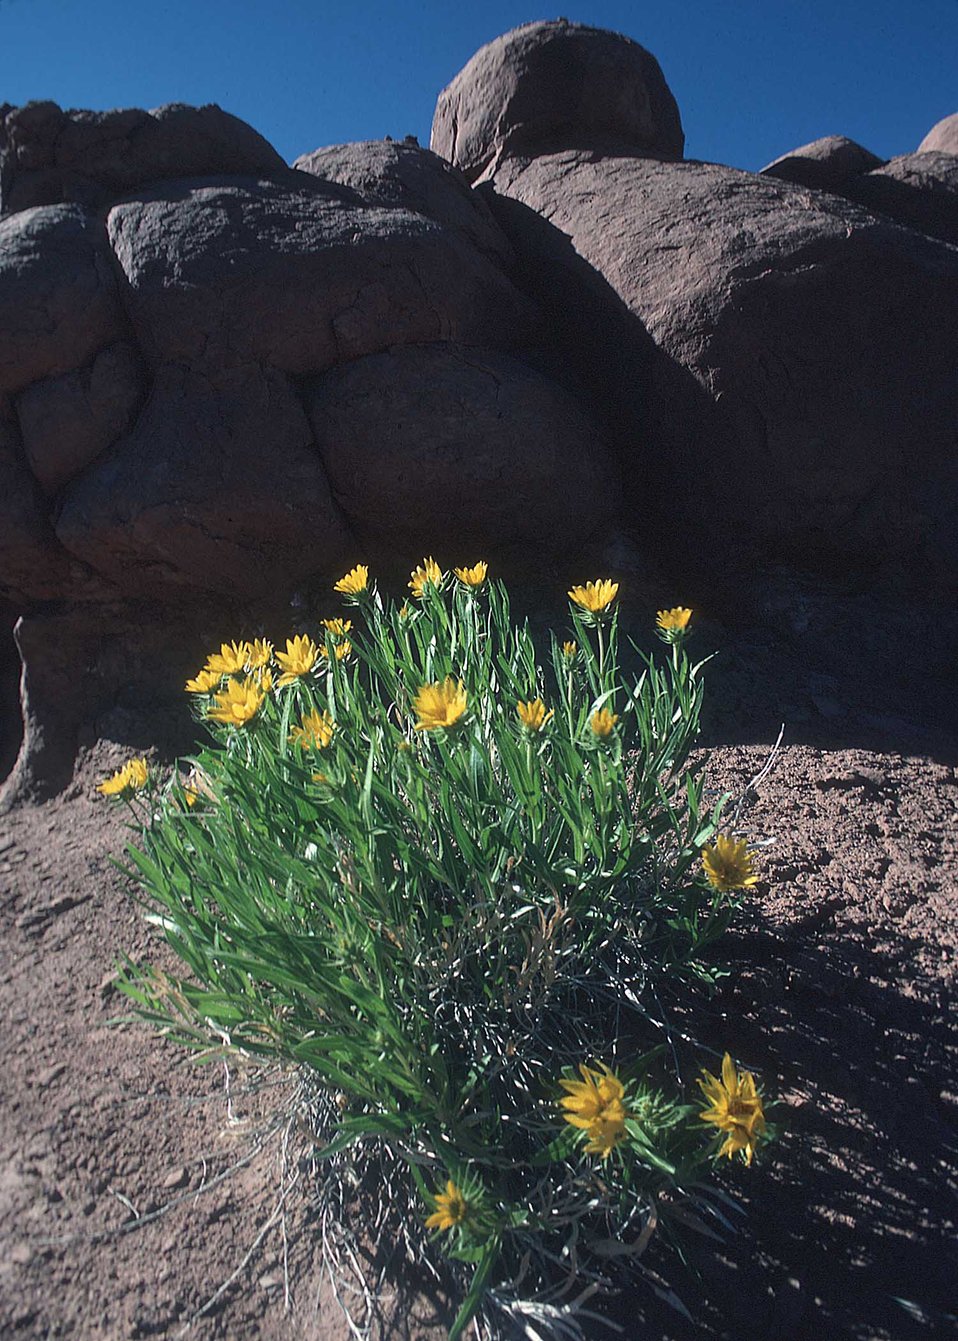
Desert flowers bloom briefly during the late spring in Southern Utah.